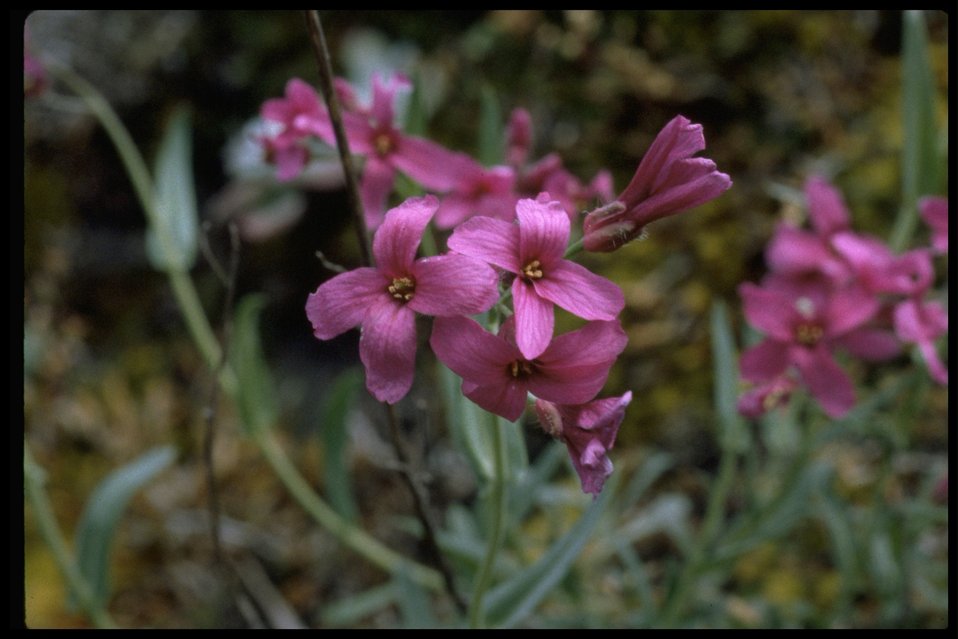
Arabis koehleri var. koehleri, commonly known as Shrubby Rock Cress.